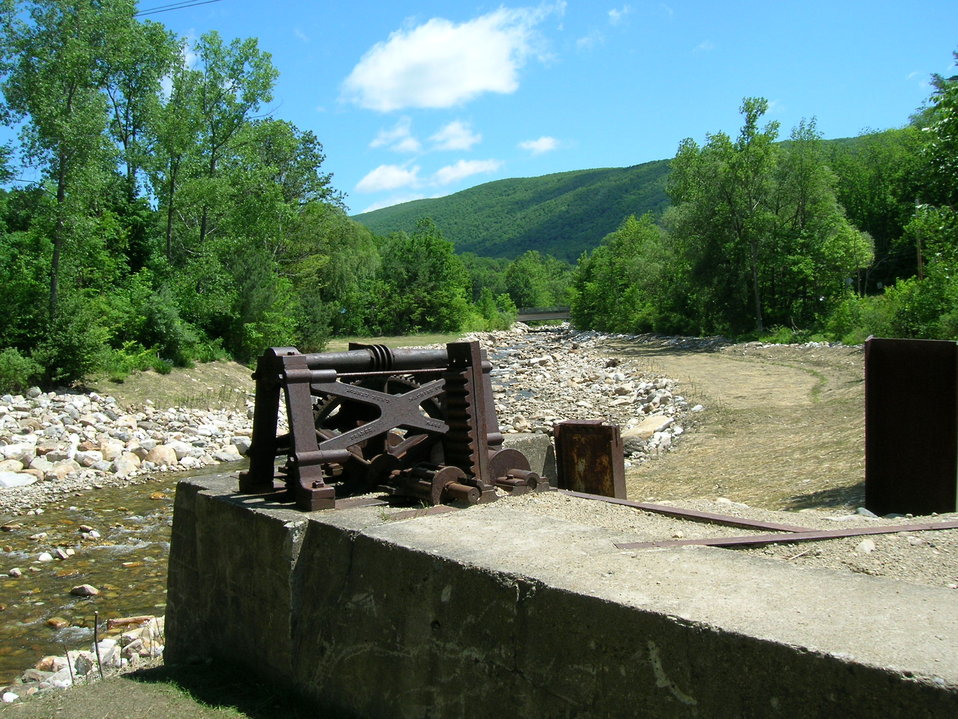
Briggsville Dam Removal Celebration